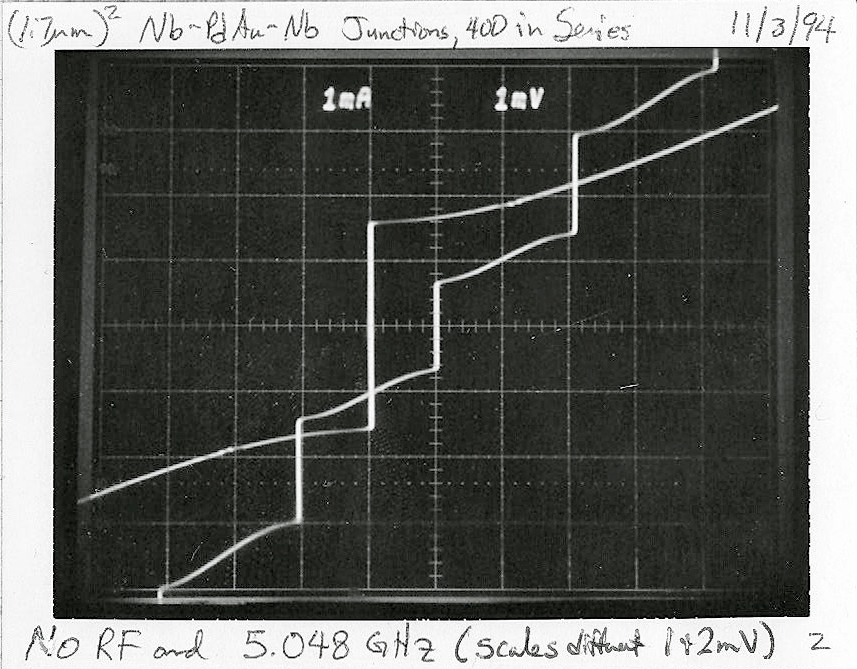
Original photo of oscilloscope traces (double exposure)

1995--In an advance toward programmable standards, NIST demonstrated the first quantized voltage steps in an array of Josephson junctions with barriers made of normal metal instead of an insulator. The circuit contains 400 junctions, 1.7 micrometers by 1.7 micrometers in size, made of niobium electrodes and gold-palladium alloy barriers.